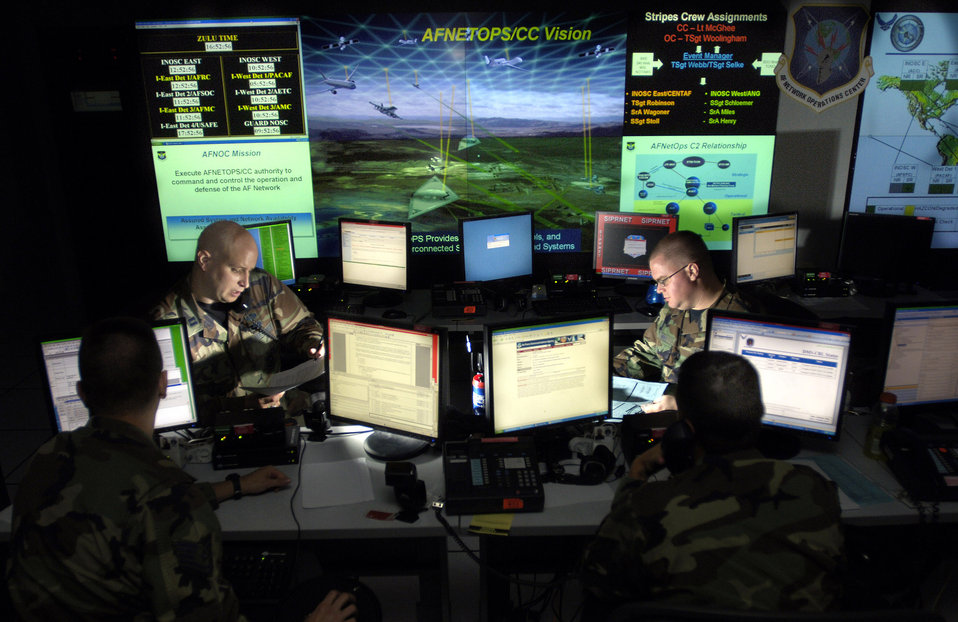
Cyberspace

Capt. Jason Simmons and Staff Sgt. Clinton Tips update anti-virus software for Air Force units to assist in the prevention of cyberspace hackers at Barksdale Air Force Base, La. The activity is in support of the new Air Force Cyberspace Command.